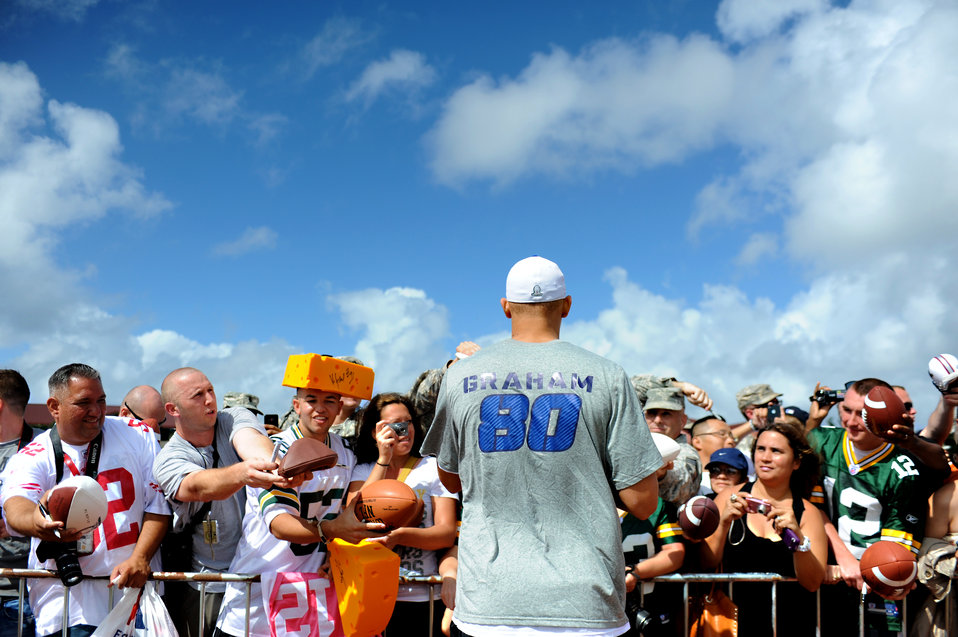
What a Saint

Jimmy Graham, a New Orleans Saints tight end, signs autographs for service members and their families during the Pro Bowl practice at Earhart Field on Joint Base Pearl Harbor-Hickam, Hawaii, Jan. 26, 2012. Graham is a two-year veteran of the league with 1,666 yards receiving and 16 touchdowns.